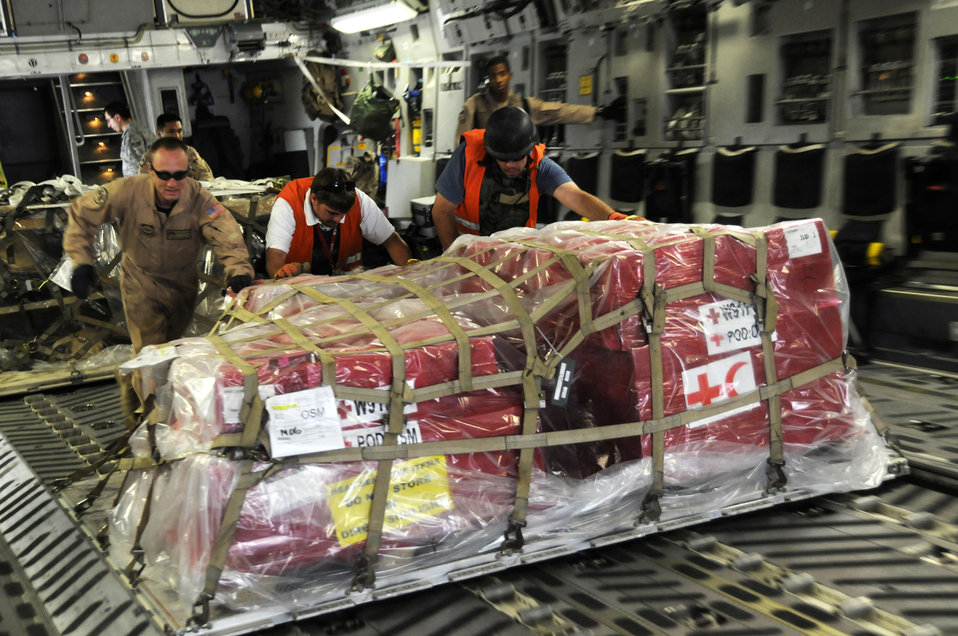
Airlift delivers for warfighters

Airmen unload cargo from the back of a C-17 Globemaster III Nov. 19 at Mosul Air Base, Iraq. The C-17 has been delivering cargo to and from different bases in the area of responsibility in support of Operation Iraqi Freedom.